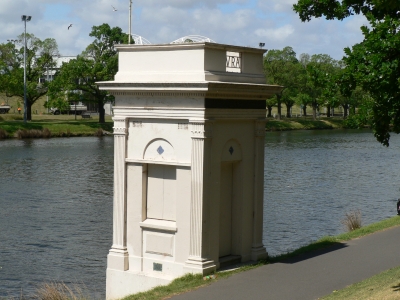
Heritage rowing judges box. Yarra River. Melbourne.